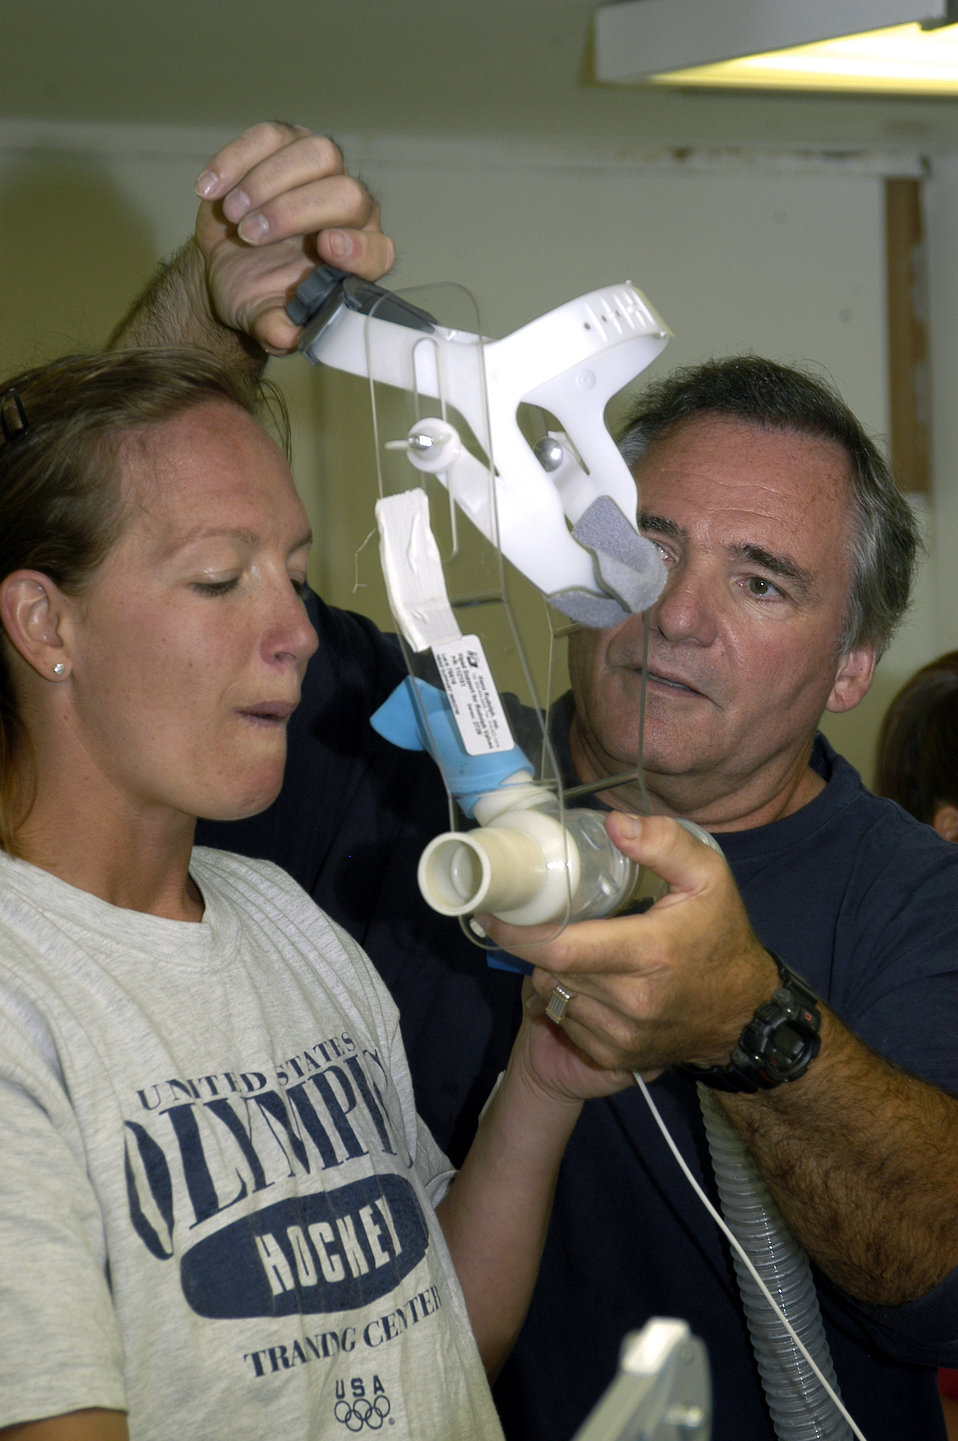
What the VO2

PIKES PEAK, Colo. - Dr. Ken Kambis (right) removes from the headgear from 1st Lt. Jacki Grant following her VO2 Max ride on the summit here. Dr. Kambis is a scientist working on altitude research study. Lieutenant Grant is one of 18 Airmen living on the summit of Pikes Peak this summer to gauge how the body reacts to living and exercising in a high-alpine environment.